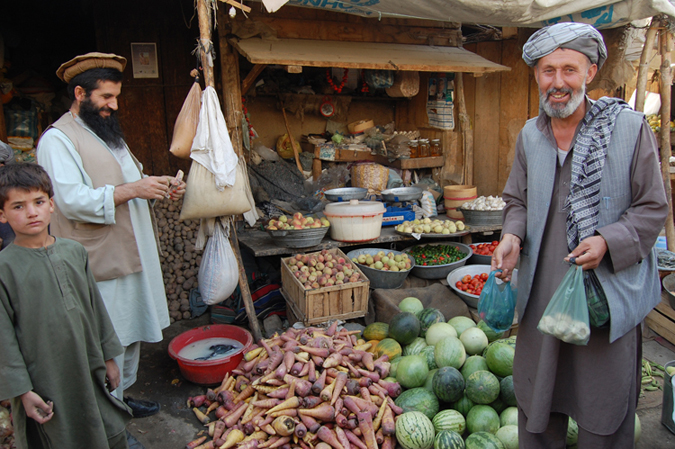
Baharak Market